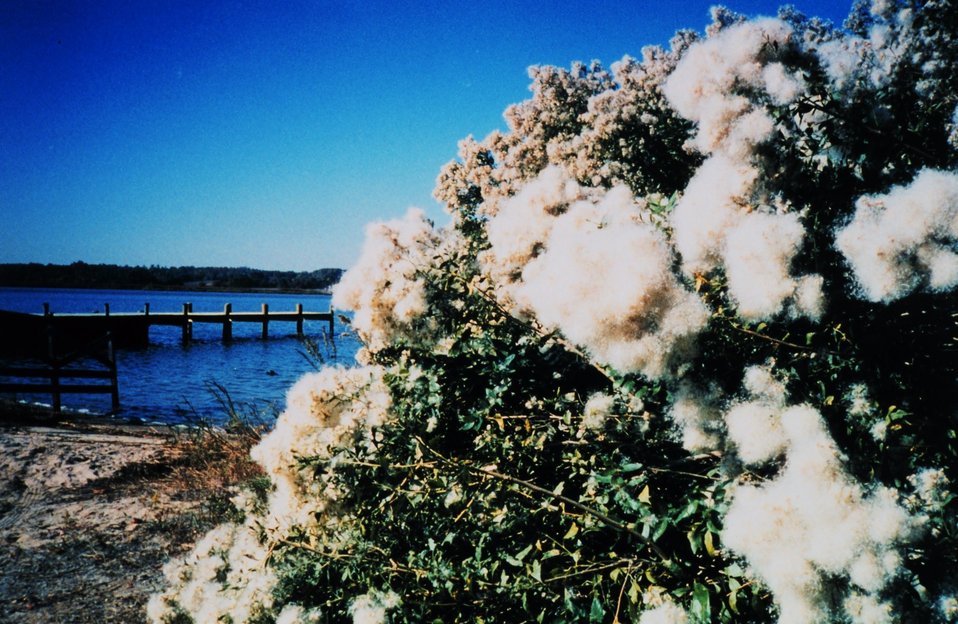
Groundsel bushes displaying silver-bristled seeds following flowering in late summer.